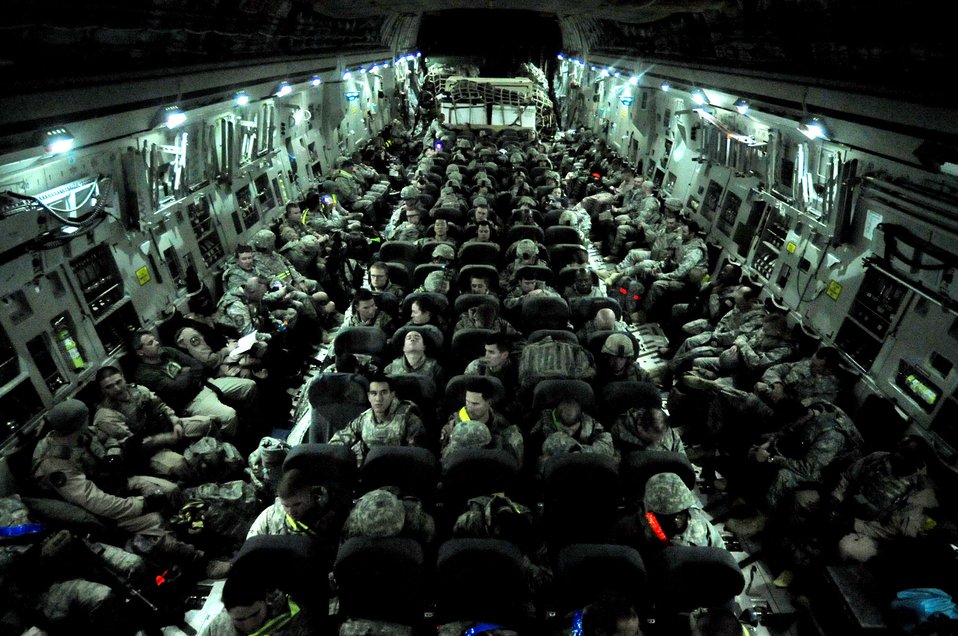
Last Airmen flying out of Iraq

Airmen assigned to the 407th Air Expeditionary Group prepare to take off on a C-17 Globemaster III Dec. 18, 2011, at Ali Air Base, Iraq. The Airmen are the last service members to leave Iraq. Since 2003, more than one million service members have served in Iraq.